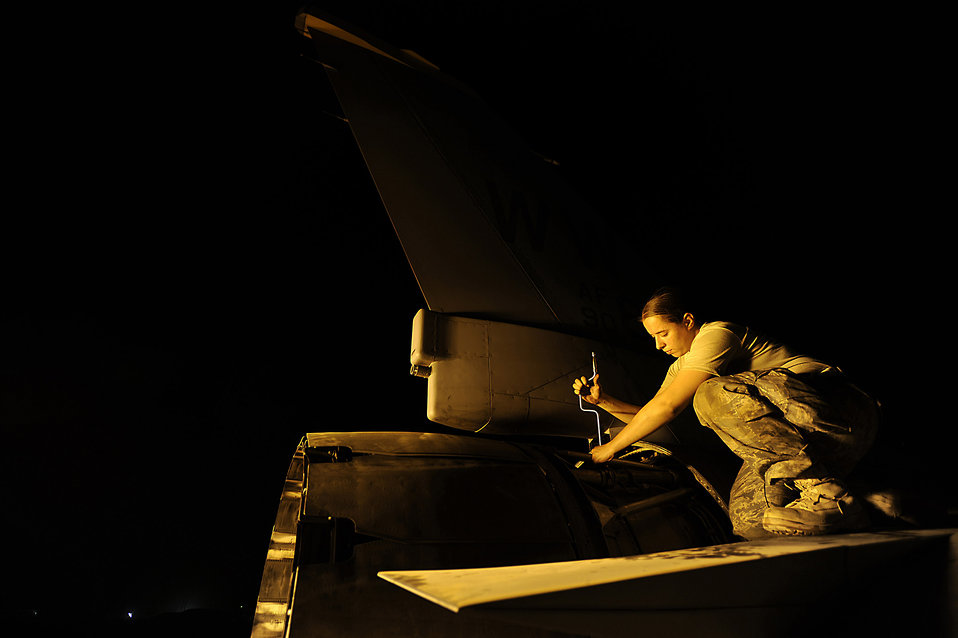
Burning the midnight oil

Airman 1st Class Jessica Guinn tightens clamps around an actuator on an F-16 Fighting Falcon Oct. 6 during some late-night maintenance at Joint Base Balad, Iraq. Airman Guinn, an aerospace propulsion apprentice with the 332nd Expeditionary Aircraft Maintenance Squadron, is deployed from Misawa Air Base, Japan. Her hometown is Flint, Mich.